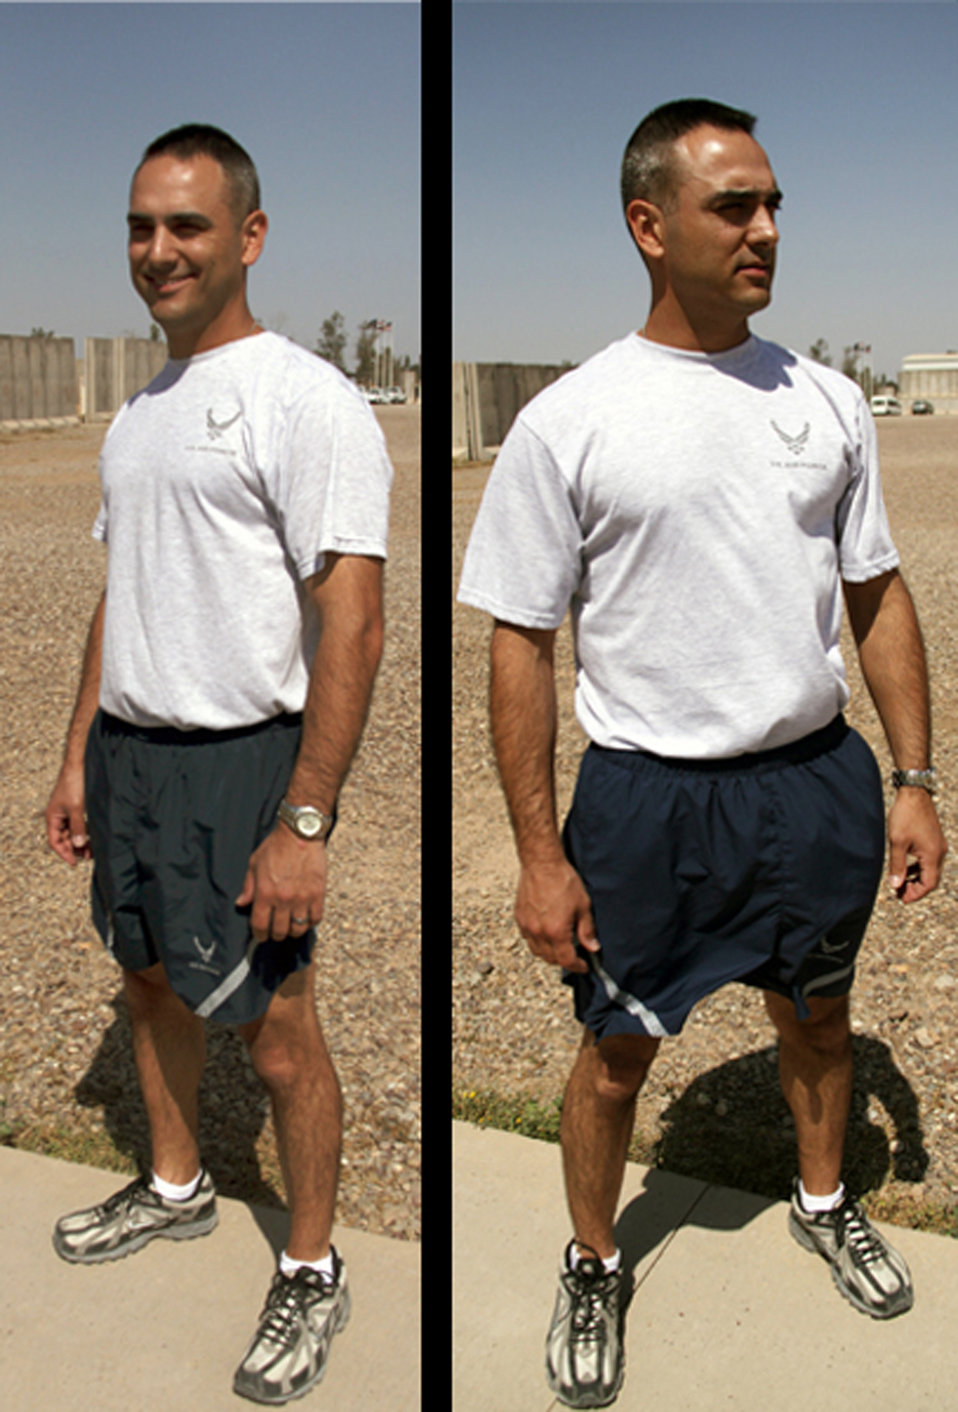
Airman field-tests modified PT uniform in Iraq

Senior Airman James Debiase models the current physical training uniform (left) and the modified PT uniform (right) April 13 at Joint Base Balad, Iraq. Airman Debiase was selected to field-test the PT uniform while deployed here from Dyess Air Force Base, Texas, and to provide feedback to leadership at the end of April. Airman Debiase is a 332nd Expeditionary Civil Engineer Squadron emergency manager, and his hometown is Glastonbury, Conn.